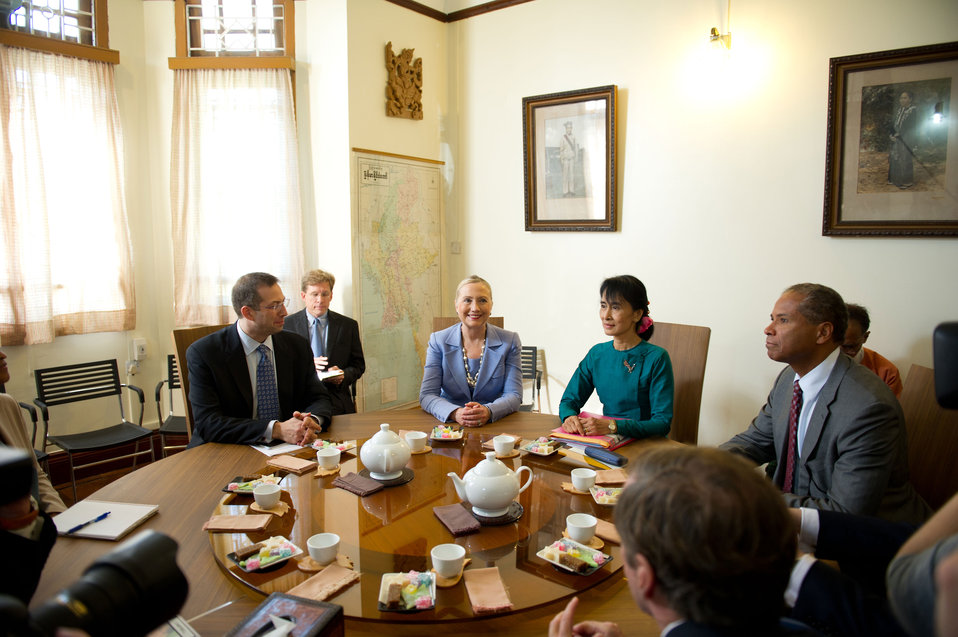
Secretary Clinton Meets With Daw Aung San Suu Kyi

U.S. Secretary of State Hillary Rodham Clinton visits Daw Aung San Suu Kyi at her house in Rangoon, Burma, on December 2, 2011. Also featured in the photo is Embassy Rangoon Charge d'Affaires Michael Thurston, sitting to the left of Daw Aung San Suu Kyi.